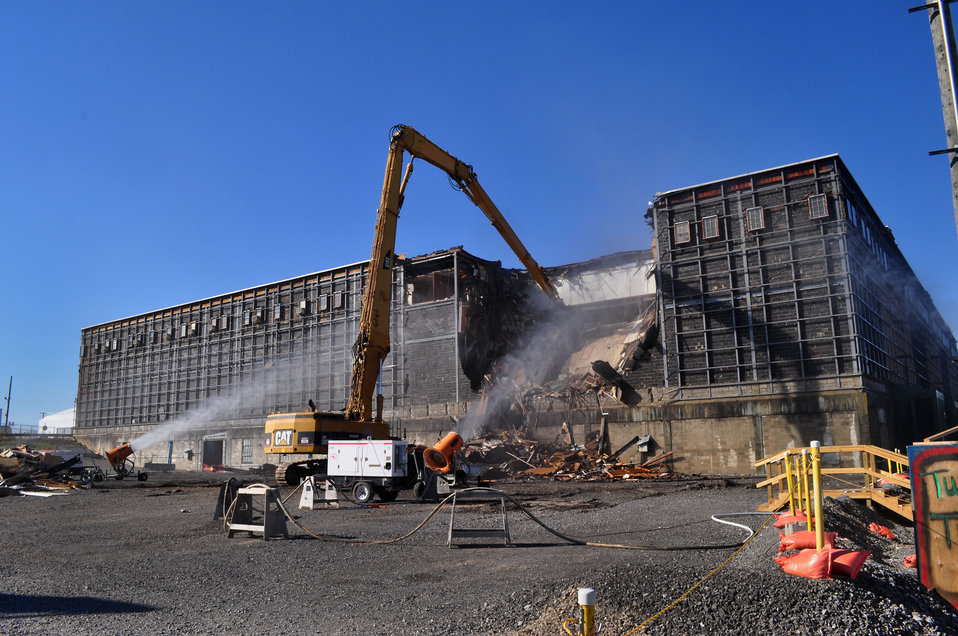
K-25 Beginning of North Tower Demolition

12-160-0400 DOE photo Lynn Freeny 10-24-2012 Oak Ridge Tennessee